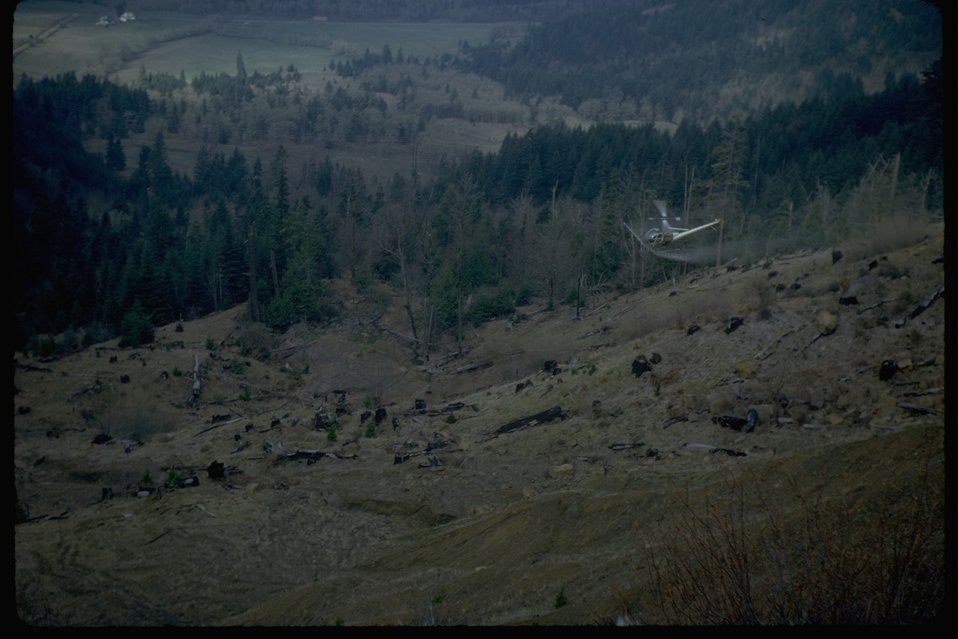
Helicopter herbicide spray operations in a clear cut area.